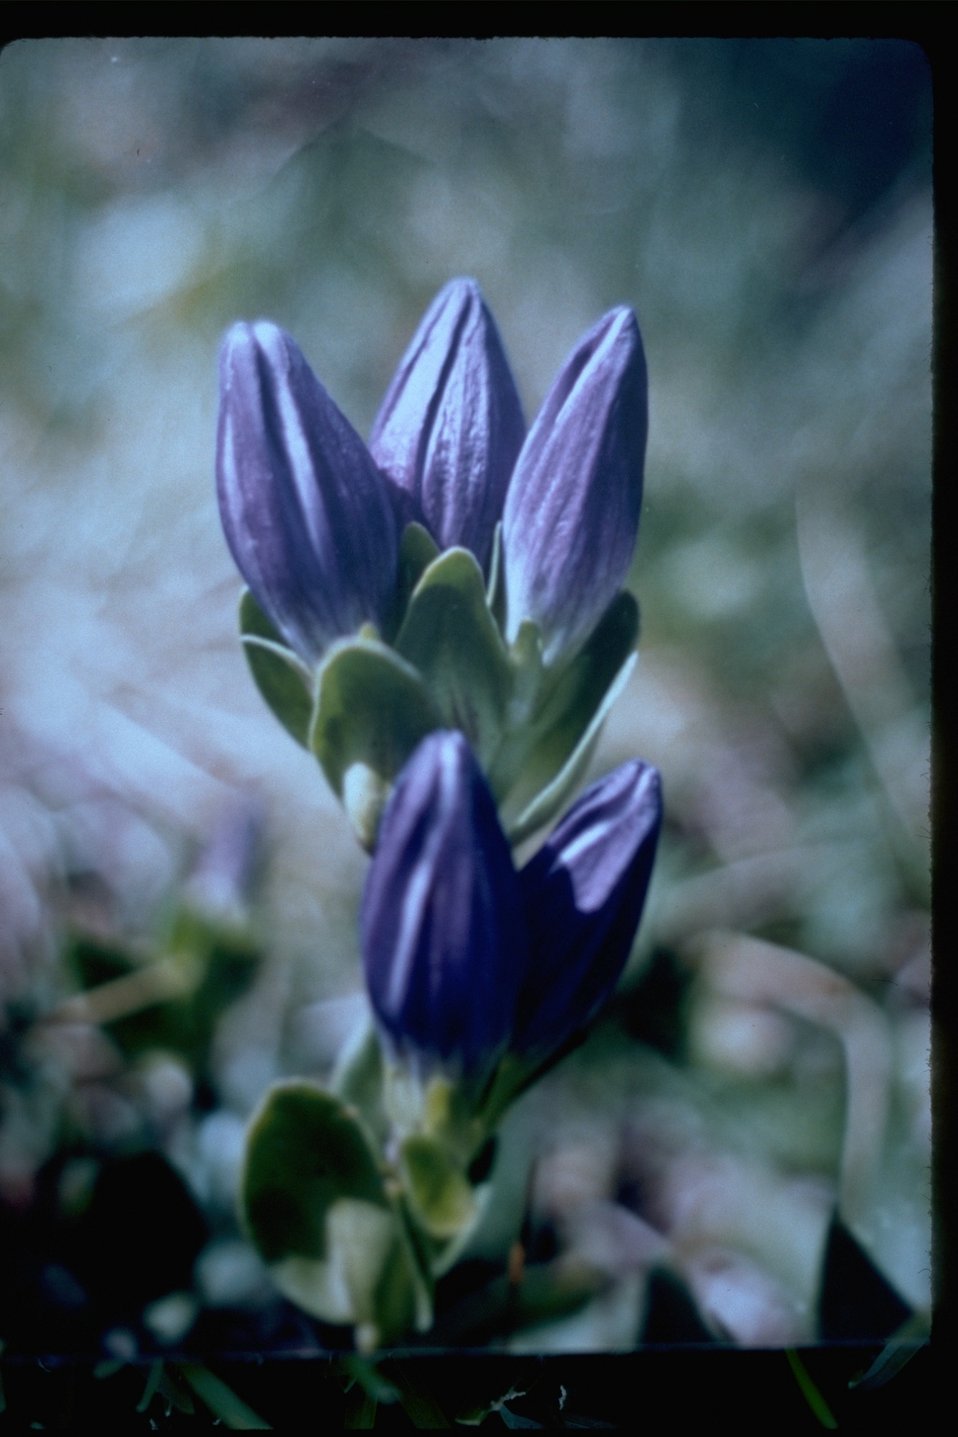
Pleated Gentian near Honeymoon Lake in the Steens area.